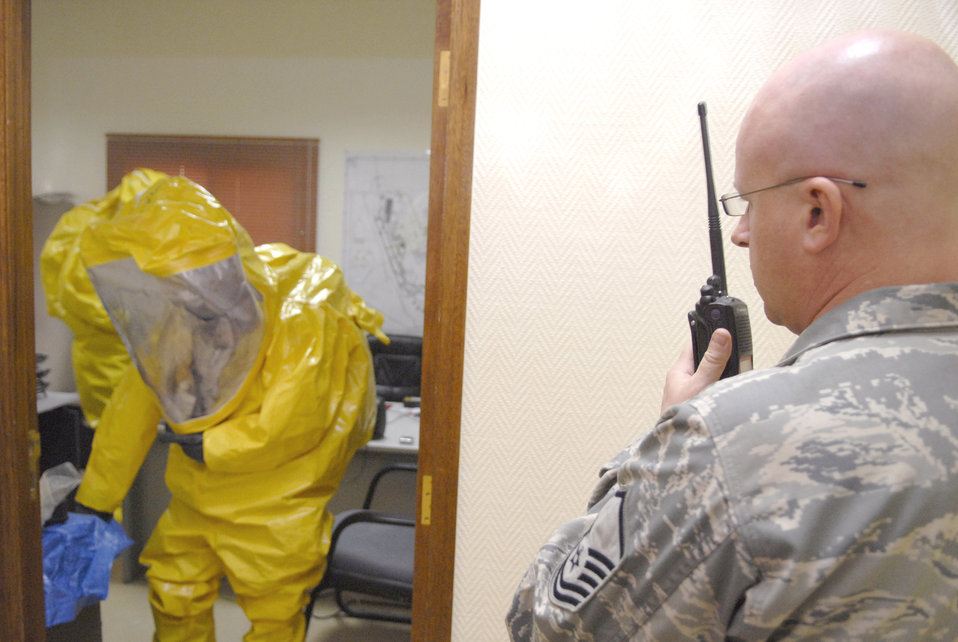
Who you gonna call?

Master Sgt. John Werner provides communication and control for hazardous response survey team members during a unit mission readiness exercise March 27 at an air base in Southwest Asia. In an actual hazardous situation, Sergeant Werner, the 379th Expeditionary Civil Engineer Squadron readiness and emergency management flight chief, would be physically separated from the survey team but would stay in communication and help develop a plan of attack for the possible contaminated location. Sergeant Werner is from Kansas City, Kan., and is deployed from Anderson Air Force Base, Guam.